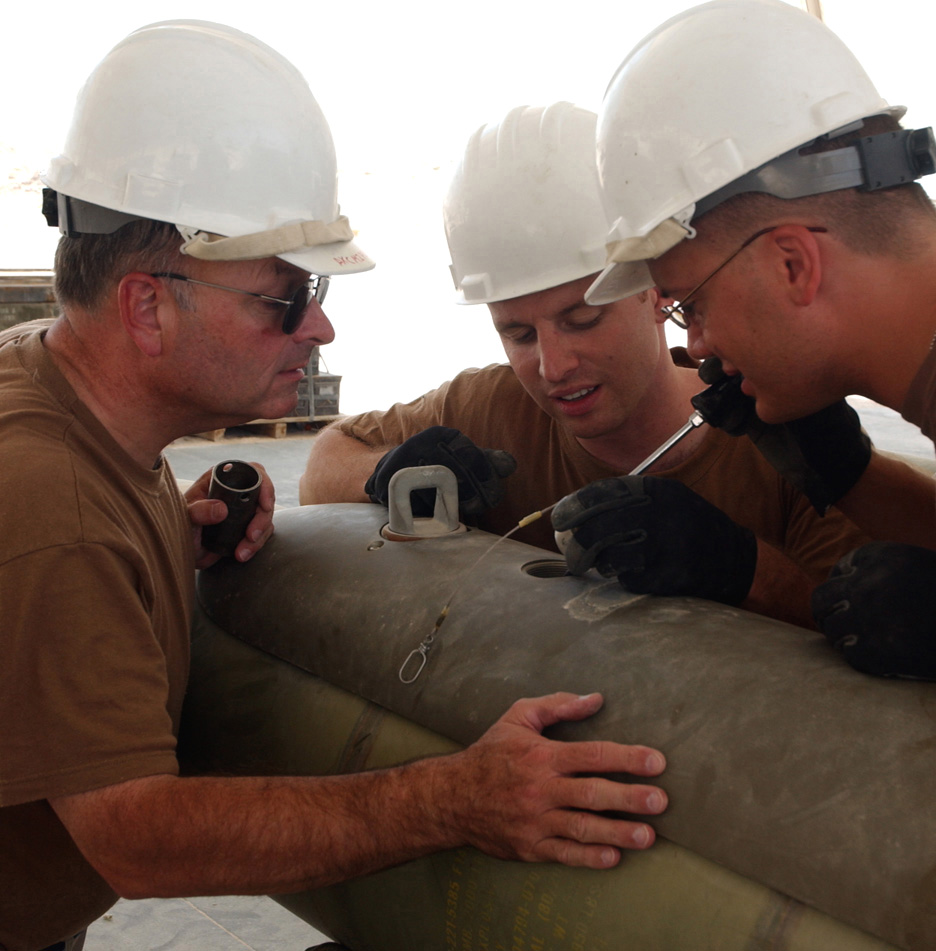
Bomb part

SOUTHWEST ASIA -- Staff Sgts. Christopher Vollmer and Jesse Ellis pull out a bomb part at a forward-deployed location as Colonel Franklin Ragland looks on. Colonel Ragland is the 379th Maintenance Group commander. Sergeants Vollmer and Ellis are deployed from the Ohio Air National Guard's 180th Maintenance Squadron.